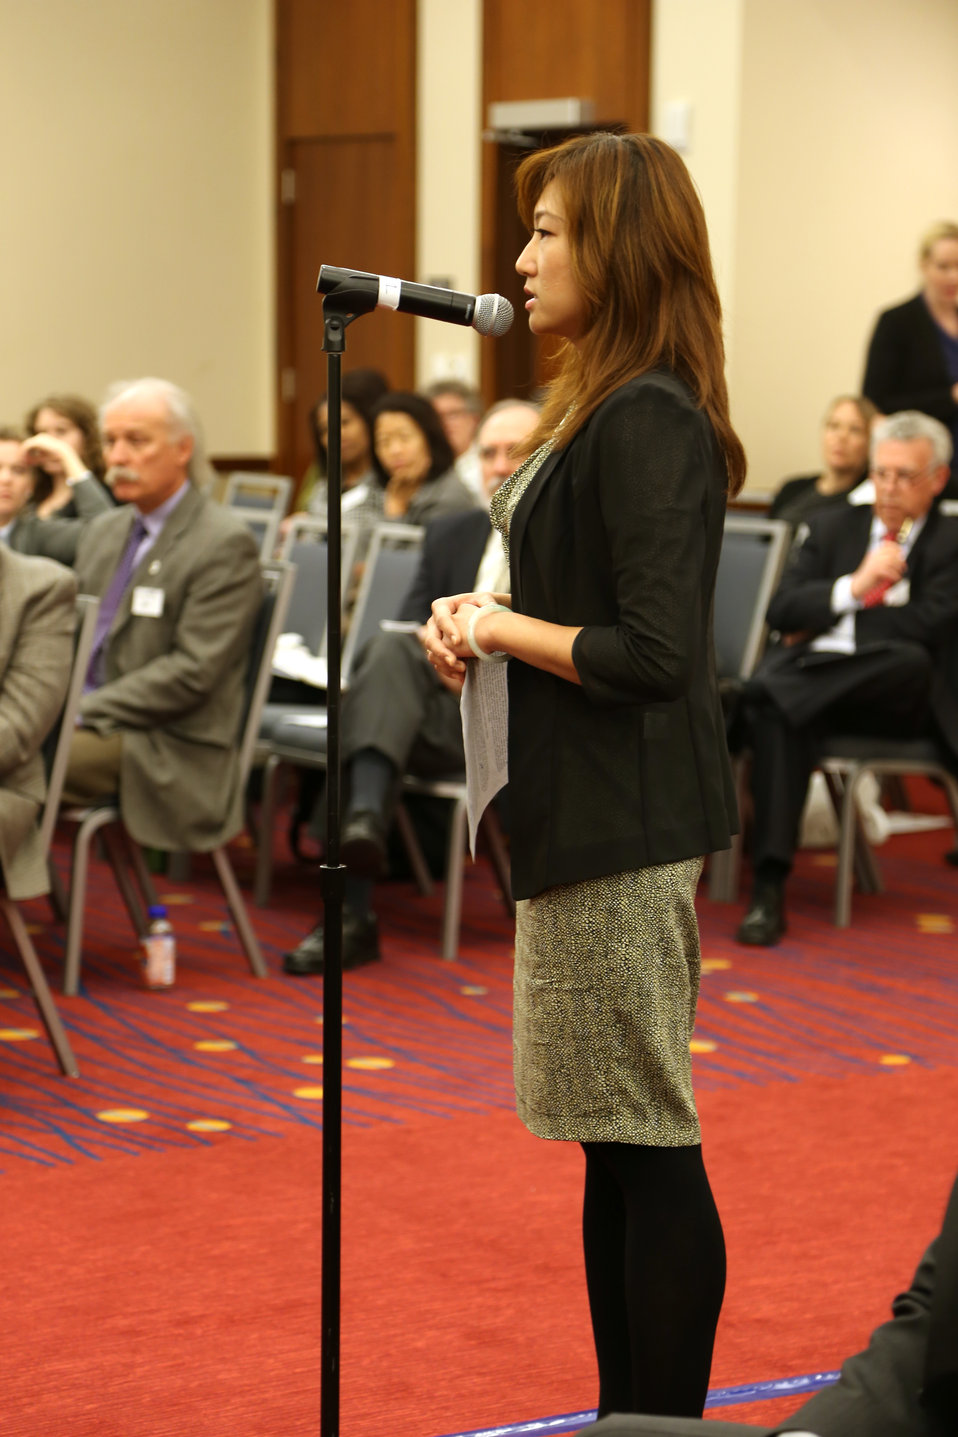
Wildlife Trafficking Advisory Council Meeting March 20, 2014